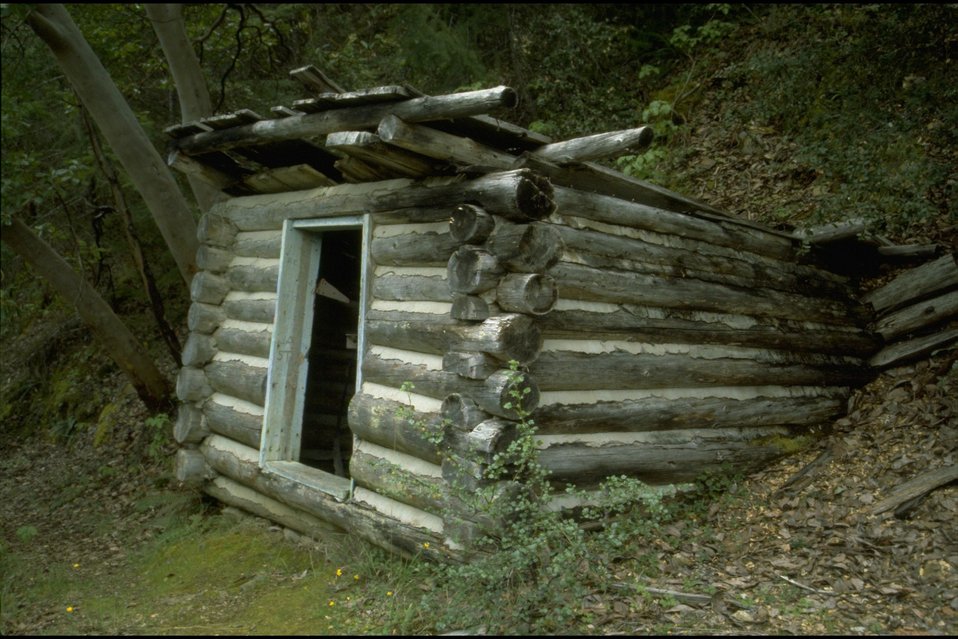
Rogue River - Wild Section. Cabin above Rainie.